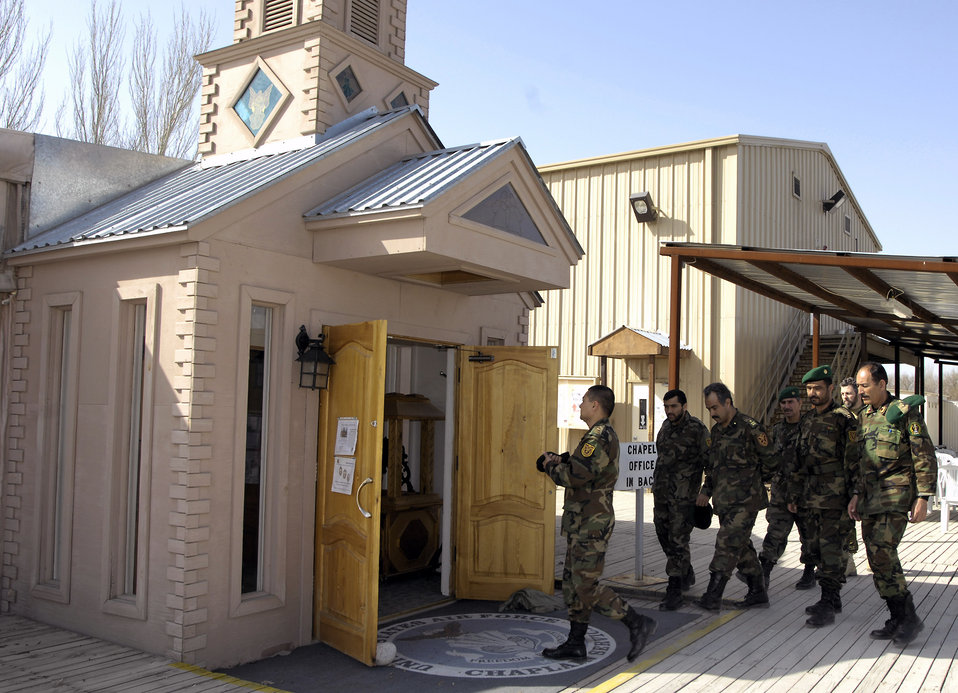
Afghan commanders visit chapel

Afghan commanders tour the base chapel March 24 at Manas Air Base, Kyrgyzstan. The Afghan leaders are transiting Manas AB on their way back from training in Germany and asked for a tour of the chapel. Chaplain (Maj.) William Bartoul of the 376th Air Expeditionary Wing briefed the commanders on the variety of worship available at the base and how base chaplains help facilitate servicemembers of all religions to practice their faith.